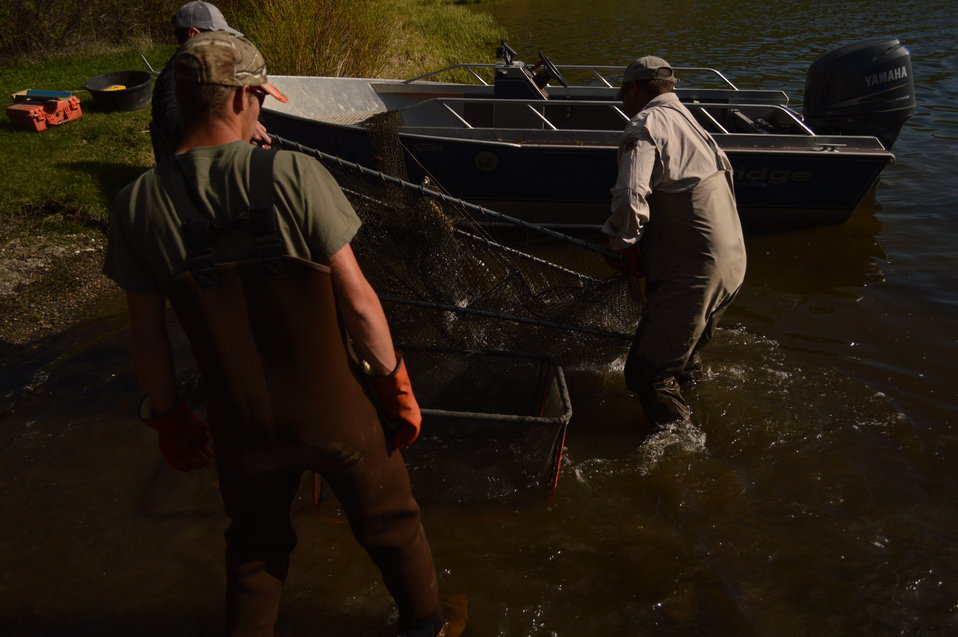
Regional Leadership Visit to Montana 2014